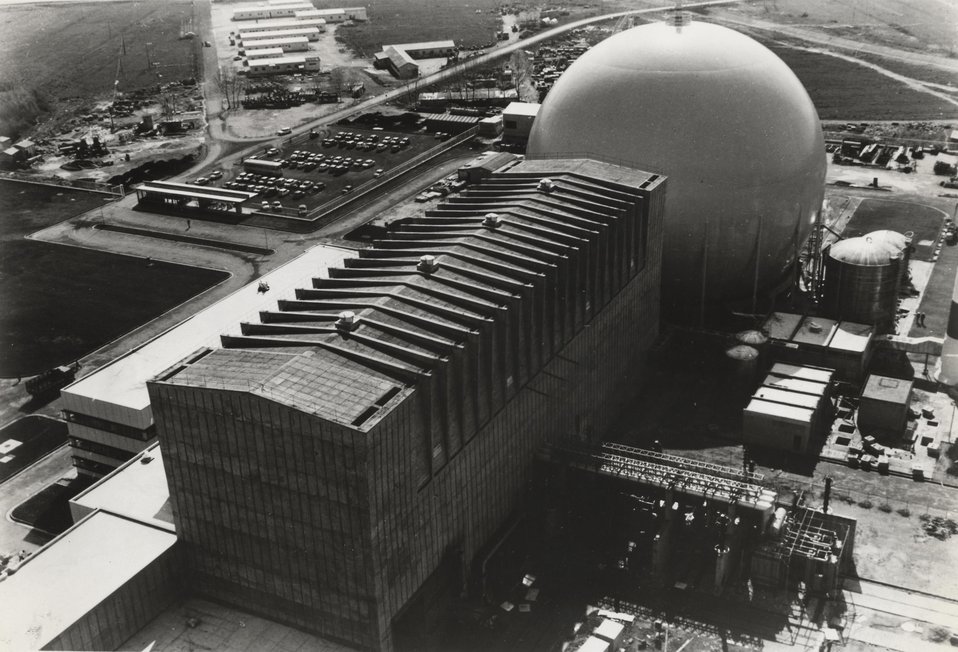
The Italian nuclear power plant SENN (Societa Elettronucleare Nazionale) on the Garigliano near Naples. c. 1967